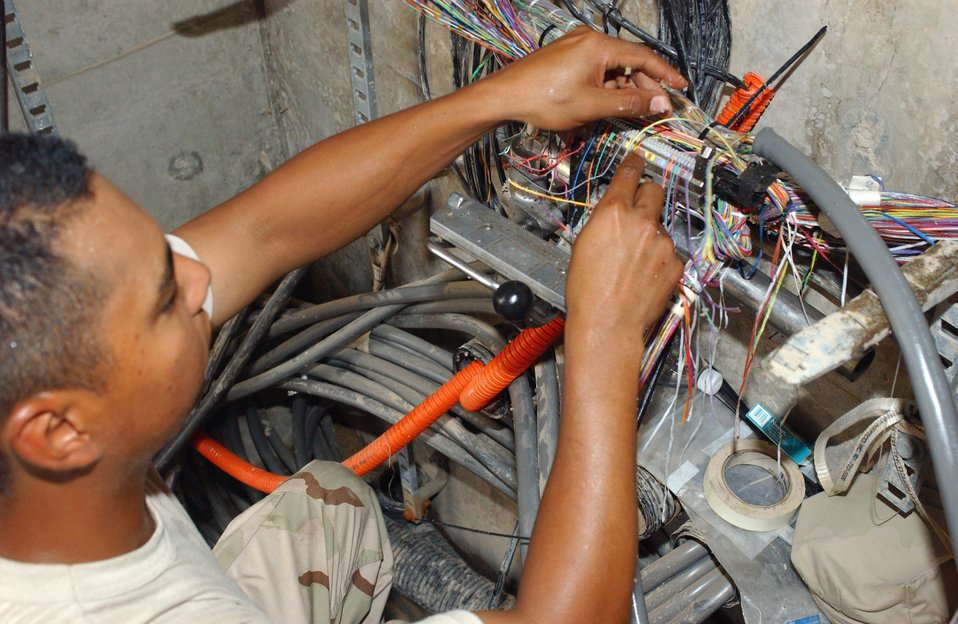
Connecting the world one wire at a time

Staff Sgt. David Reyes splices copper cables on a splice machine at Ali Base, Iraq, on Friday, May 5, 2006. Sergeant Reyes is deployed to the 407th Expeditionary Communications Squadron from F.E. Warren Air Force Base, Wyo.